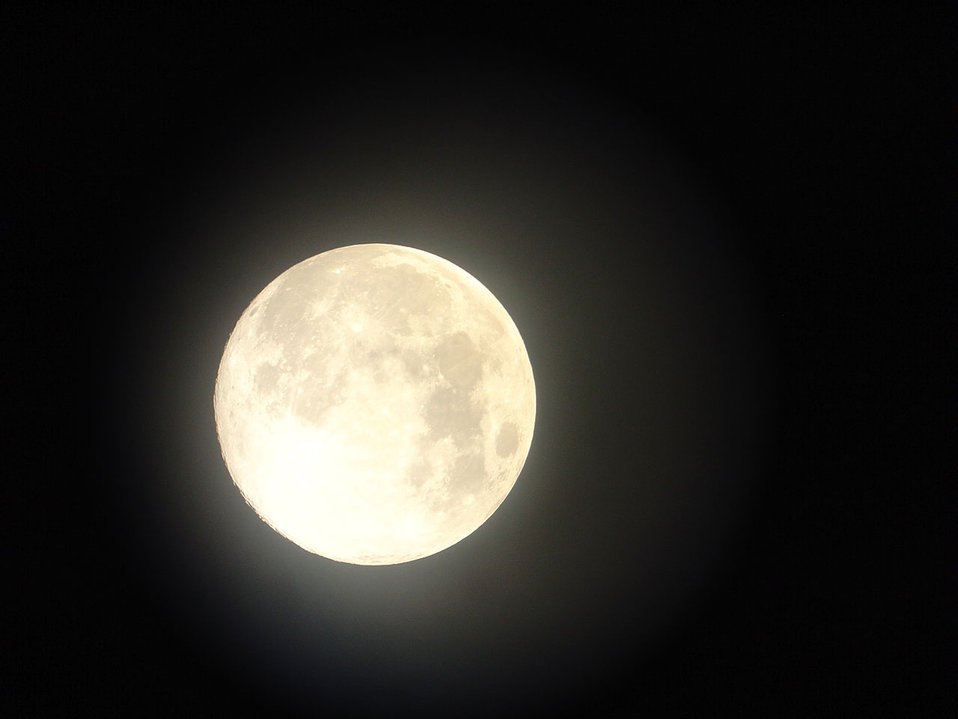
Full moon moonlight.